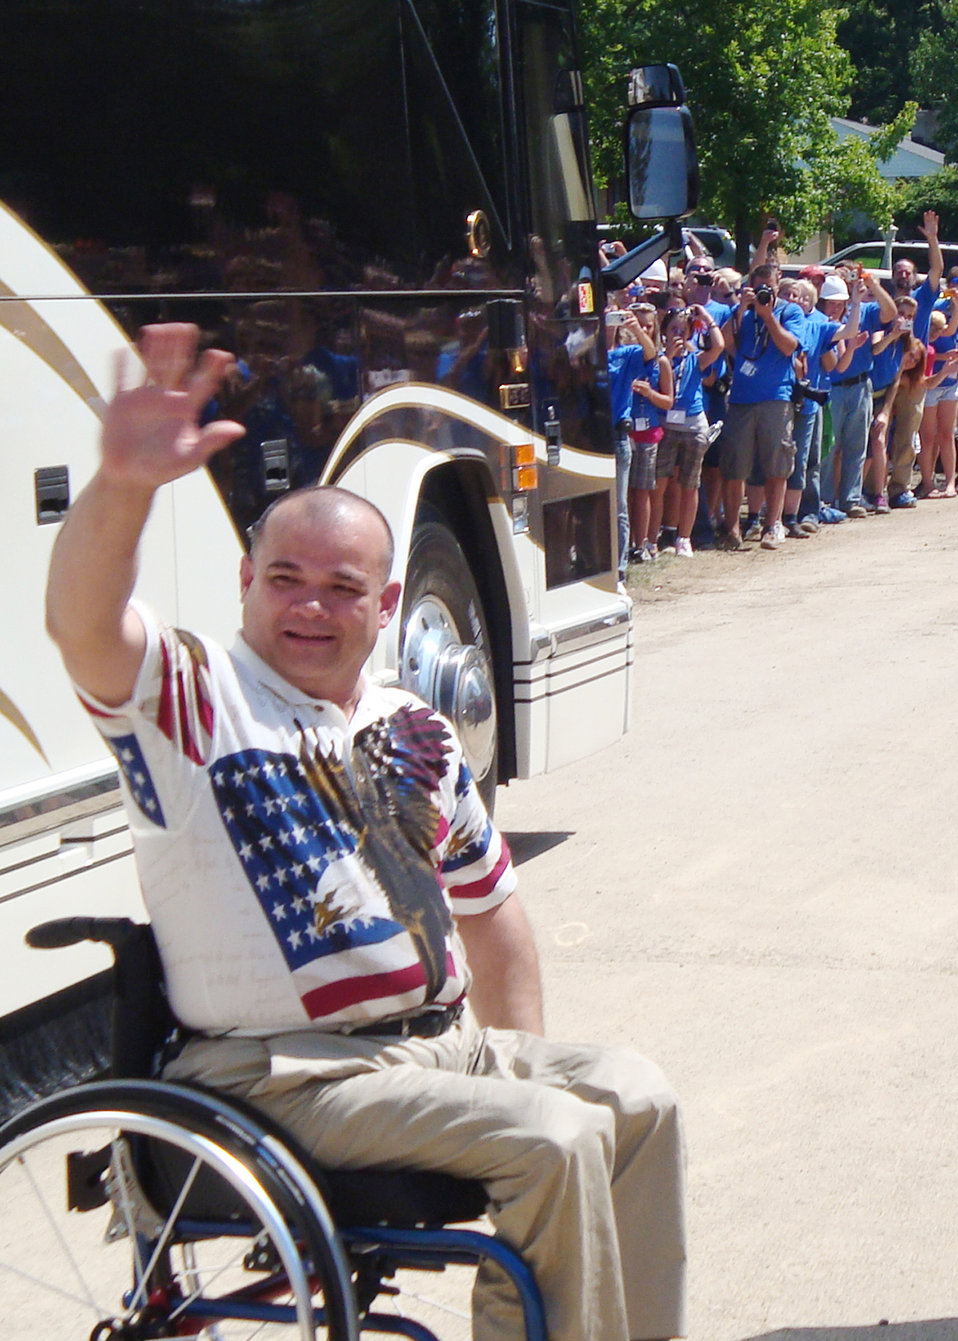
Air Force family's 'Extreme' home revealed

James Terpenning waves to volunteers and onlookers after seeing his new home unveiled as part of the television show